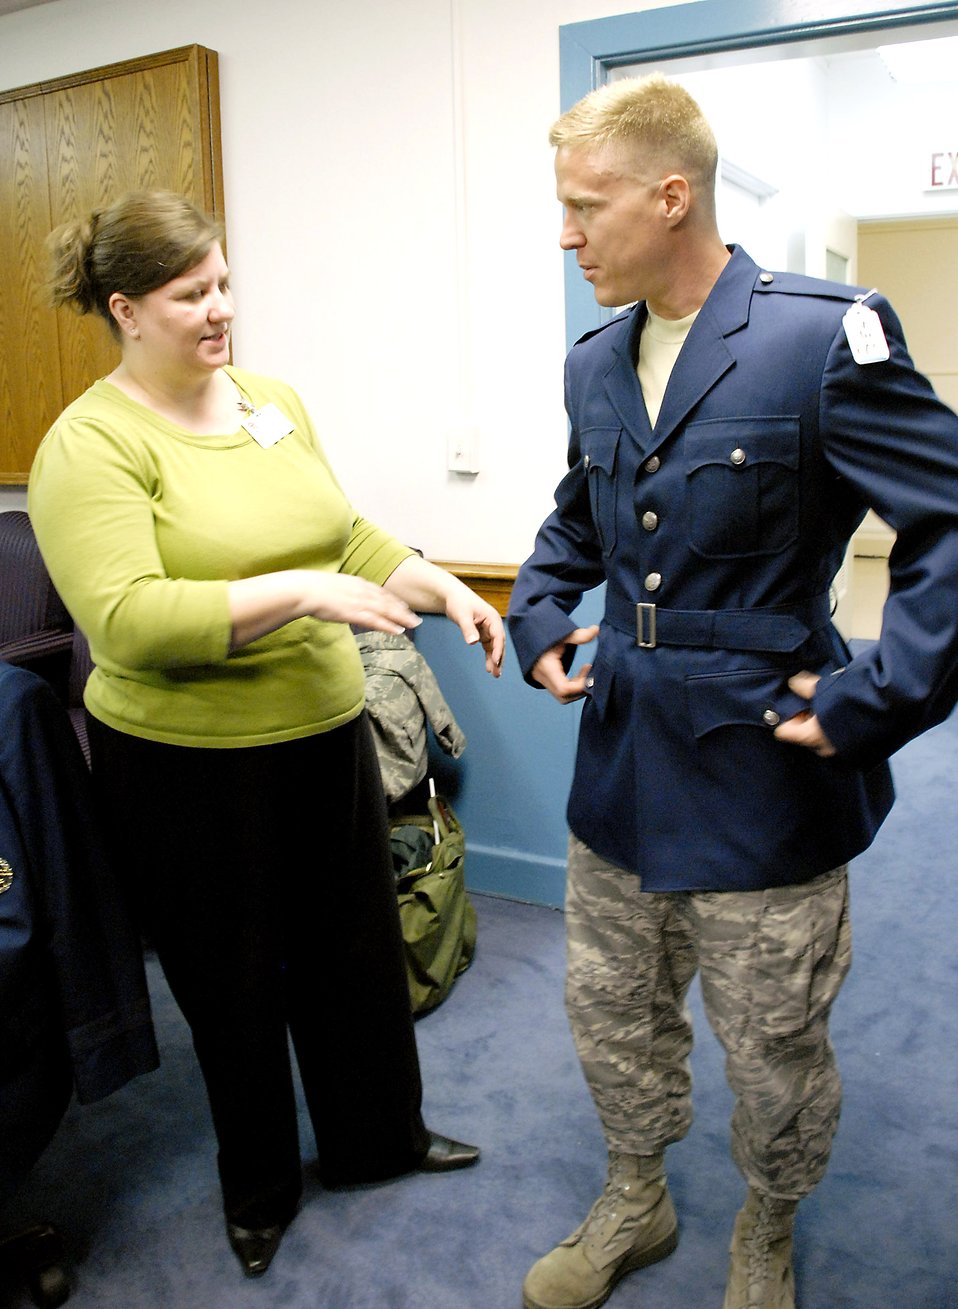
The heritage look

Lt. Col. Jeff Yocum tries on a heritage coat during a fit/wear test April 8 at the Pentagon. Measurements from various Airmen were collected by members of the Air Force Uniform Program Office so any fit adjustments can be made before the heritage service coats get field tested throughout the Air Force. Colonel Yocum is the Air Force chief of staff manpower and personnel executive officer.